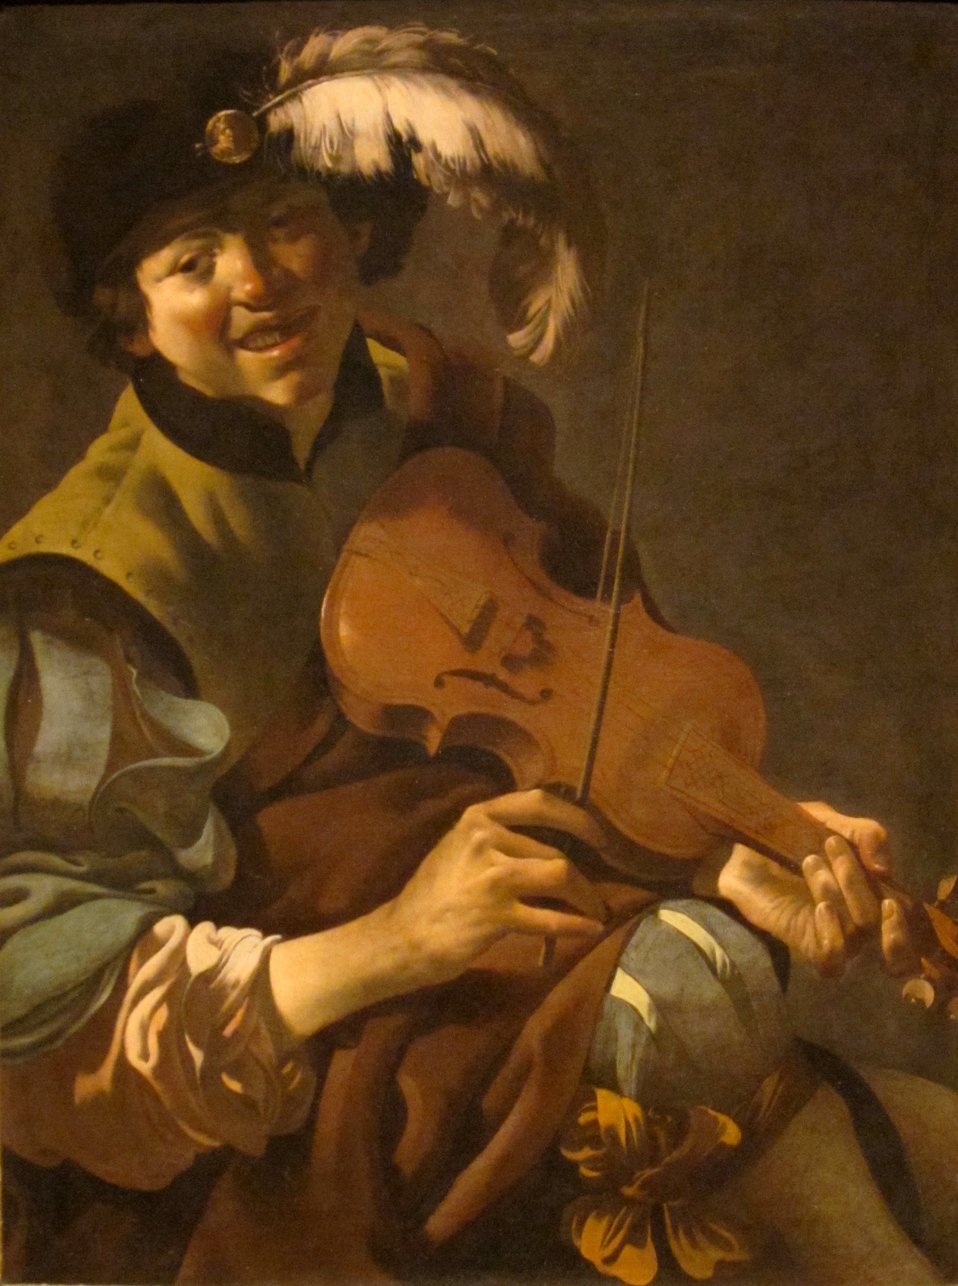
'A Boy Violinist' painting by Hendrick Terbrugghen, Dayton Art Institute